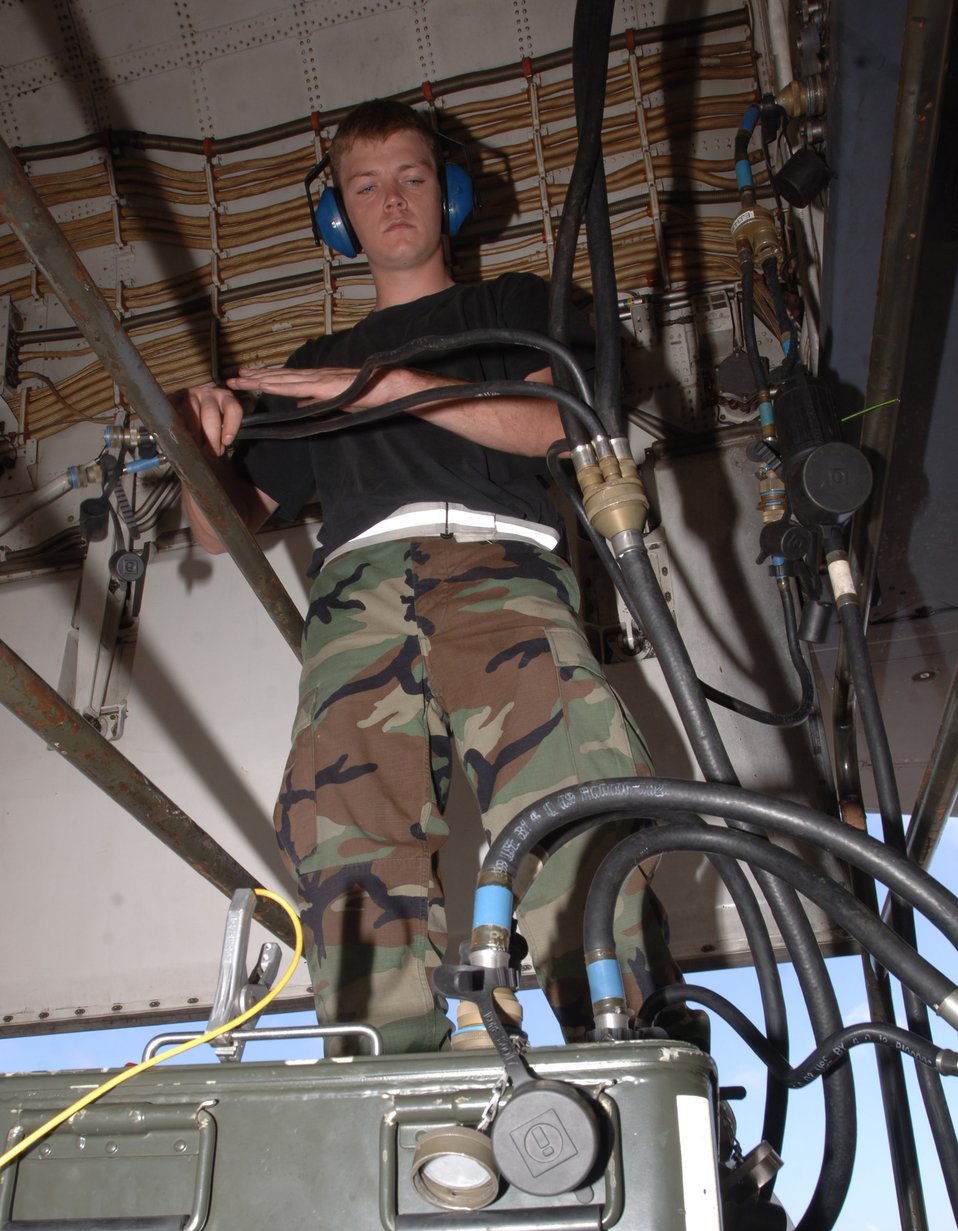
Lancer maintenance

ANDERSEN AIR FORCE BASE, Guam (AFPN) -- Senior Airman Terrance Lesko inspects the rotary launcher drive of a B-1B Lancer during his deployment here. Airman Lesko is a weapons specialist from the 28th Aircraft Maintenance Squadron at Ellsworth Air Force Base, S.D.